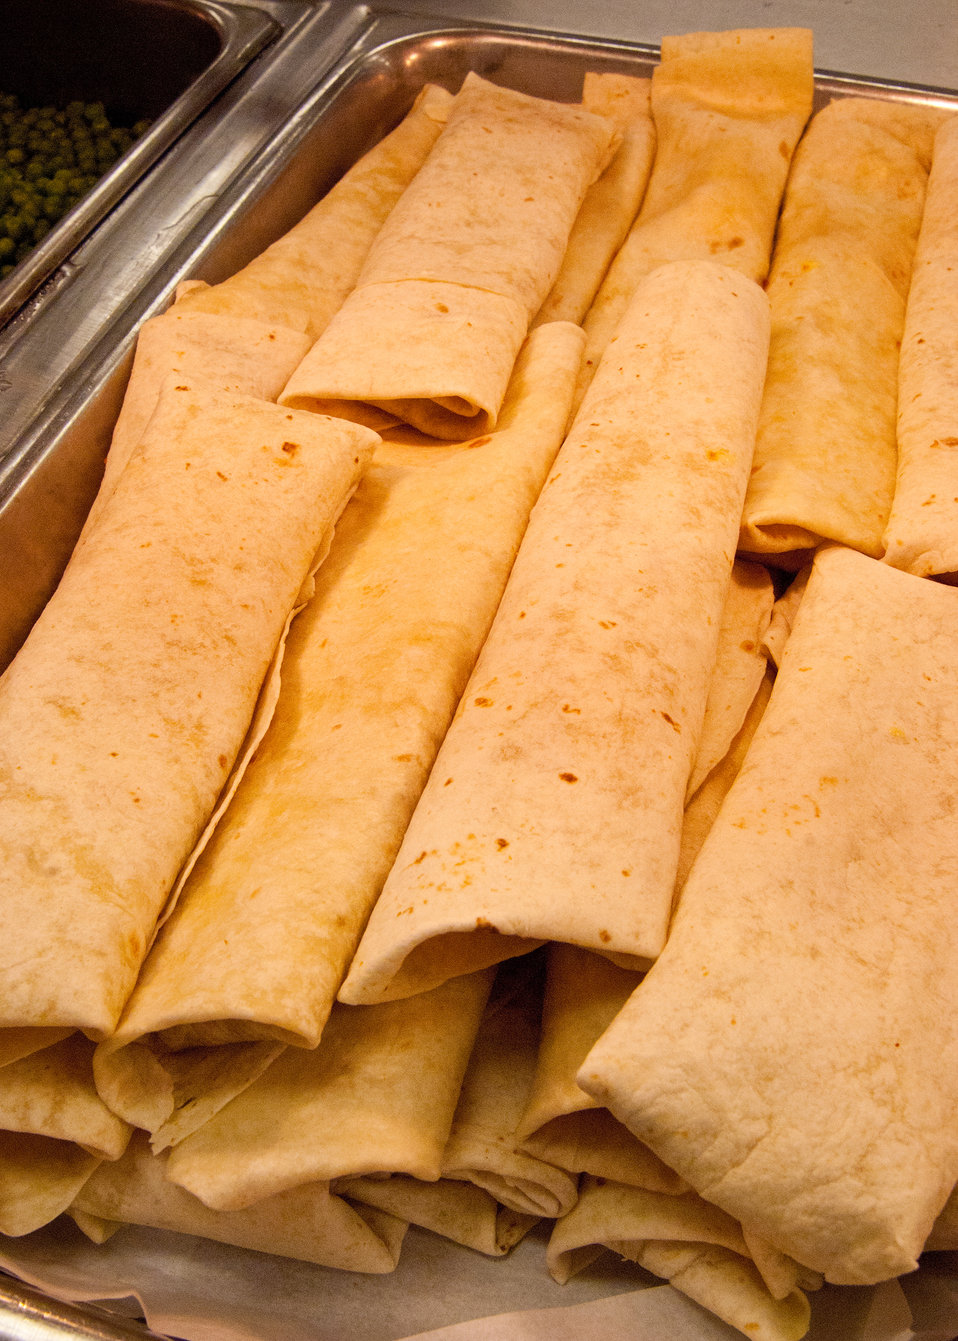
A Healthy meal choice of Baja Fish Taco Wraps at Washington-Lee High School in Arlington, Virginia for lunch service on Wednesday, October 19, 2011. The wraps are available through the National School Lunch Program. The National School Lunch Program is a federally assisted meal program administered by the United States Department of Agriculture, Food and Nutrition Service operating in public, nonprofit private schools and residential child care institutions. It provides nutritionally balanced, low-cost or free lunches to children each school day.